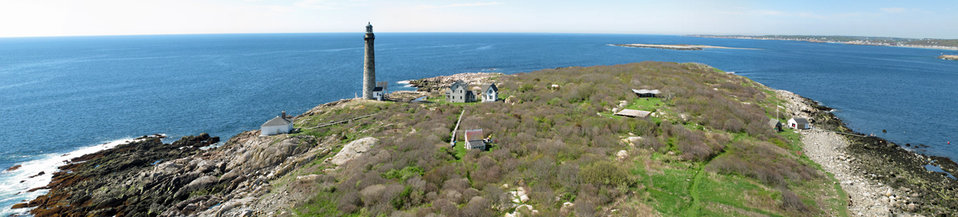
Looking south from north tower

Thacher Island National Wildlife Refuge, MA.